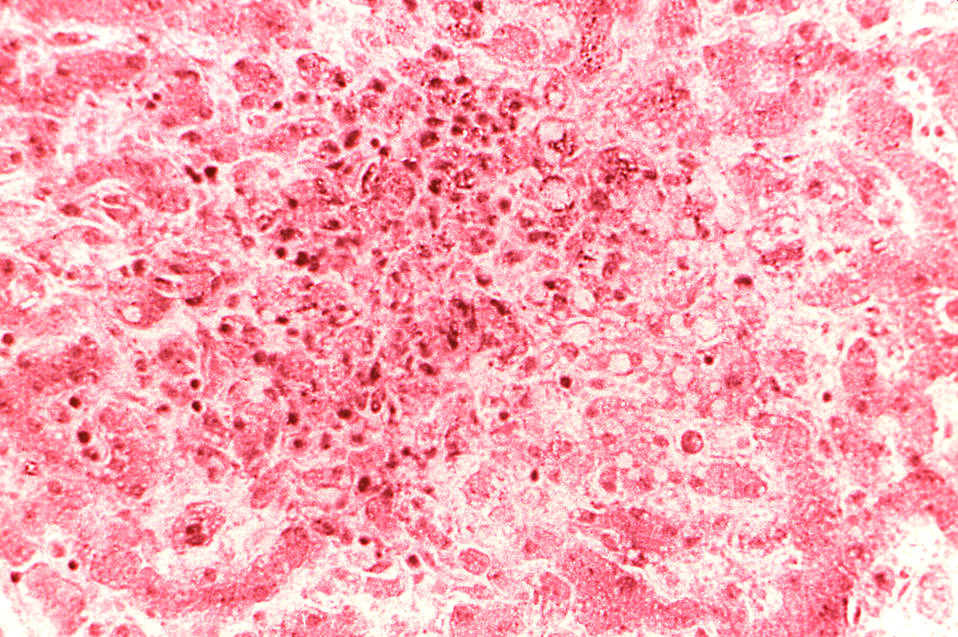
Under a moderate magnification of 280X, this hematoxylin-eosin-stained (H&E) photomicrograph depicts the cytoarchitectural changes found in a liver tissue specimen extracted from a Congo/Crimean hemorrhagic fever patient. This particular view reveals 'coagulation necrosis of hepatocytes with an associated perifocal inflammatory reaction. Several cells can be seen to be undergoing fatty degeneration."